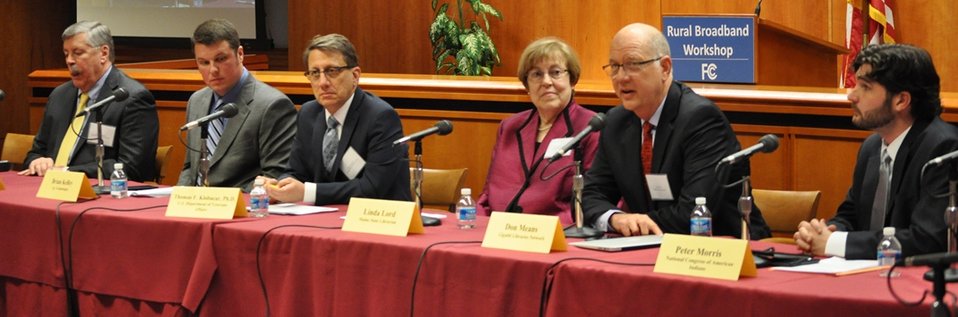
Rural Broadband Workshop: March 19, 2014

Panel 1: Broadband Needs, Challenges and Opportunities in Rural America